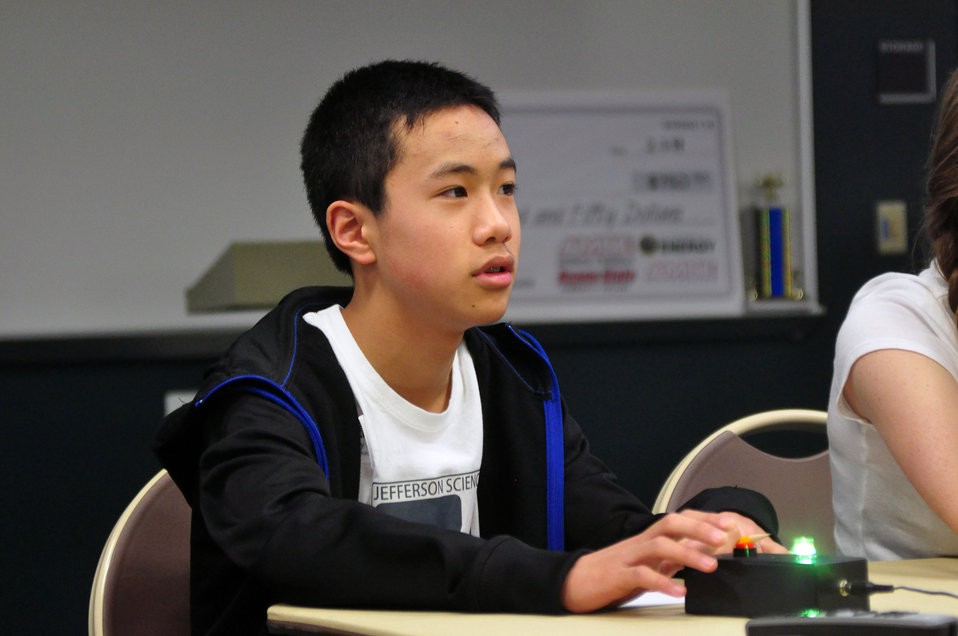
Jefferson Middle First Place DOE Middle School Science Bowl

14-017 DOE photo Lynn Freeny 2-1-2014 Oak Ridge Tennessee